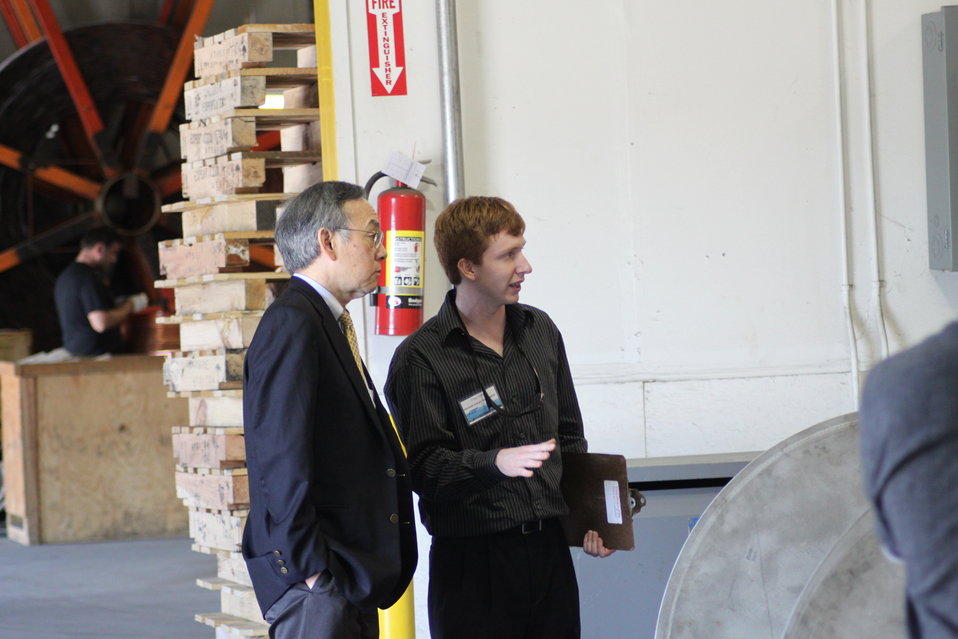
Norm 006